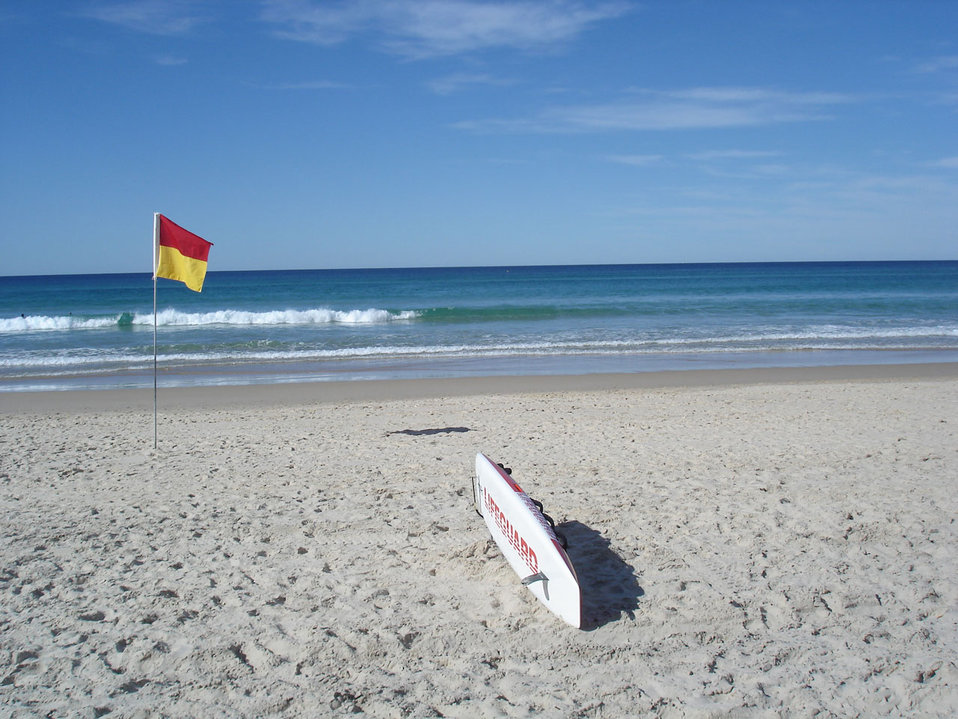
Surfers paradise

Sunny day at surfers paradise.